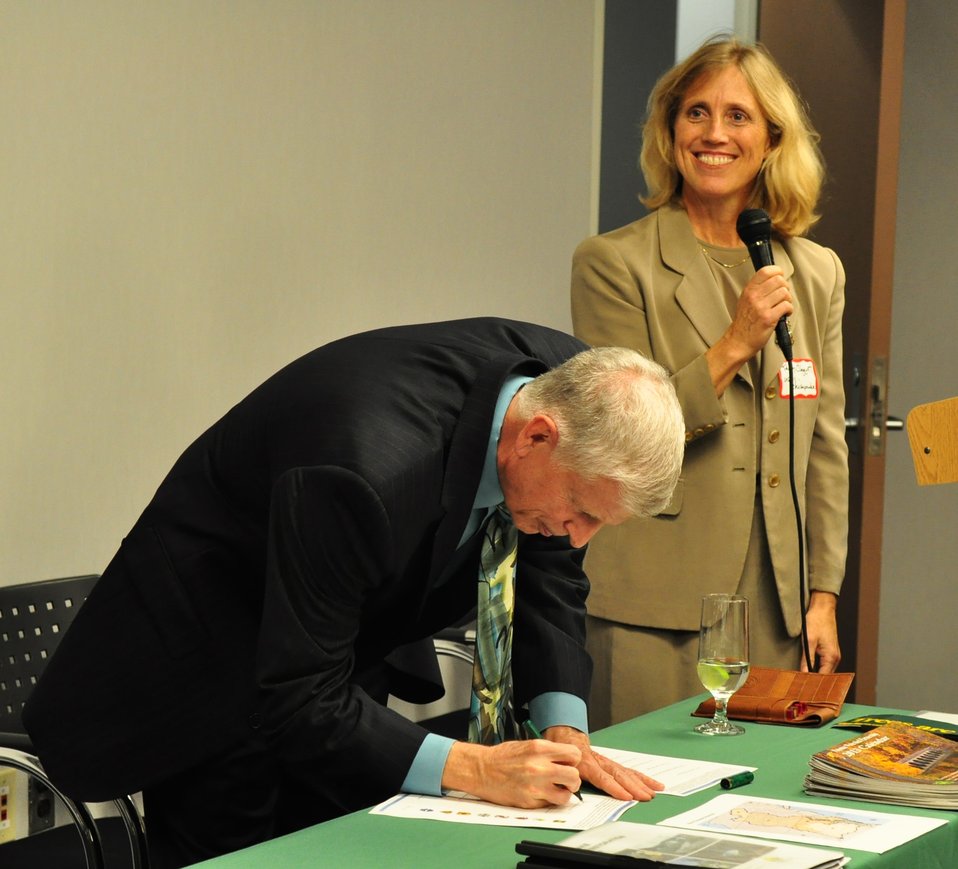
Chesapeake

U.S. Department of Agriculture (USDA) U.S. Forest Service Chief Tom Tidwell signs the Forest Restoration Strategy on Dec. 5, 2012 as part of the final Chesapeake Restoration Strategy. (Forest Service Chesapeake Liaison Sally Claggett looks on). The final Chesapeake Restoration Strategy is a multi-agency project involving the Departments of Agriculture, Defense, Homeland Security, Interior, Transportation, and the Environmental Protection Agency.